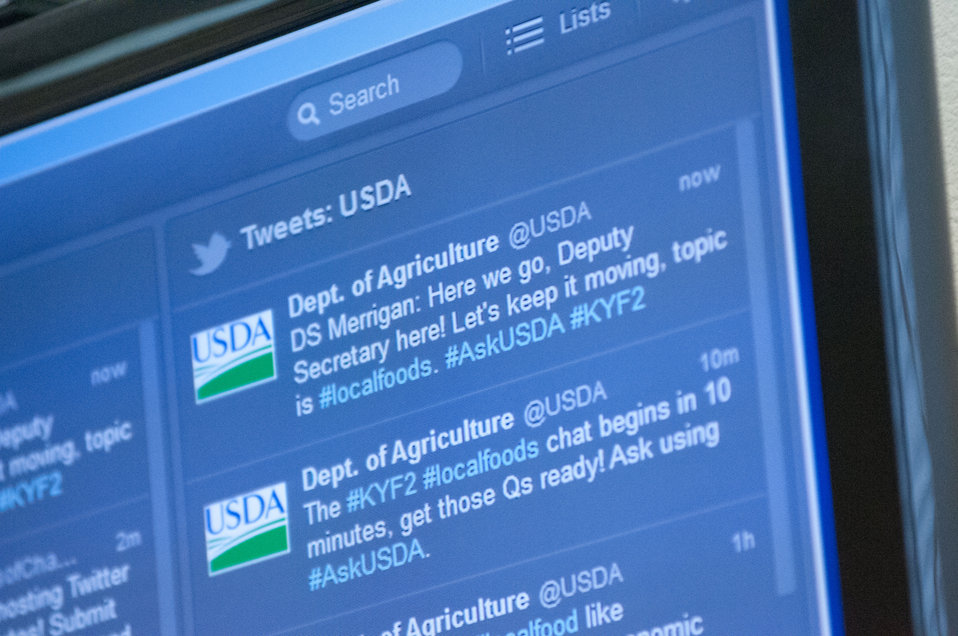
Agriculture Deputy Secretary Kathleen Merrigan, hosts a live Twitter chat focused on the Department’s support of local and regional food systems and the recent release of the 2.0 version of the Know Your Farmer, Know Your Food Compass on Tuesday, July 24, 2012, in Washington, D.C. Deputy Secretary utilized her staff and other subject matter experts to provide useful answers to questions from the public during the #ASKUSDA Virtual Office Hours on Local Food.